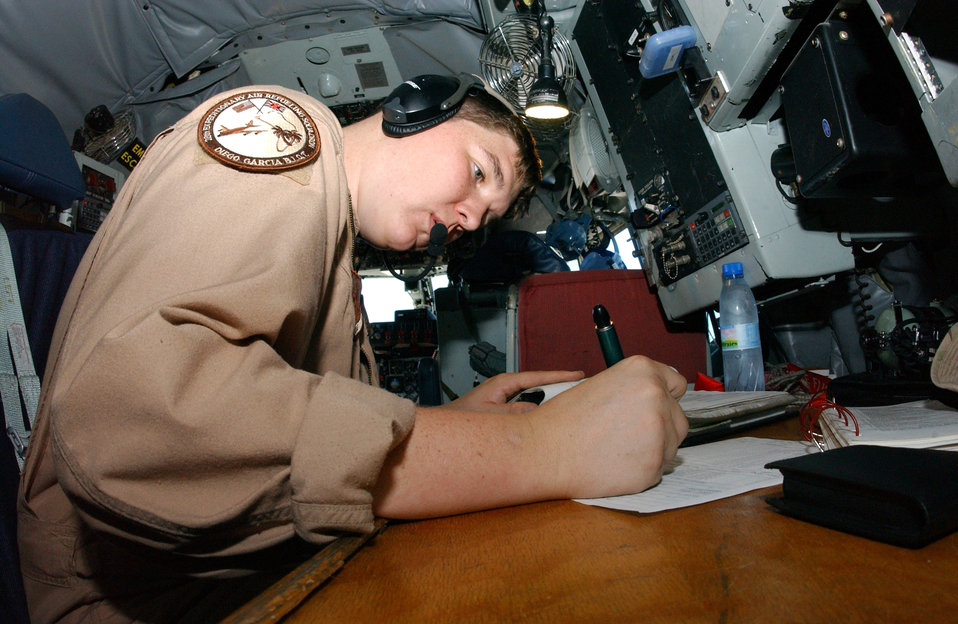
OPERATION ENDURING FREEDOM -- Senior Airman William Paull, a boom operator on a KC-135 Stratotanker, prepares for a refueling mission from a forward-deployed location. Airman Paull is deployed to the 28th Expeditionary Refueling Squadron from the 911th Air Refueling Squadron at Grand Forks Air Force Base, N.D.